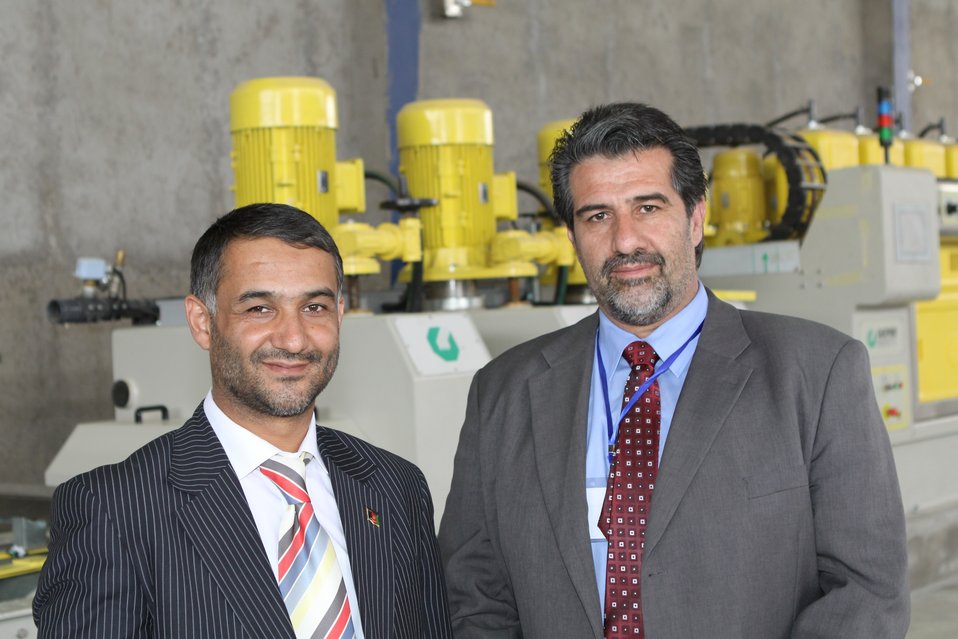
100525 Hirat Marble Conference 374